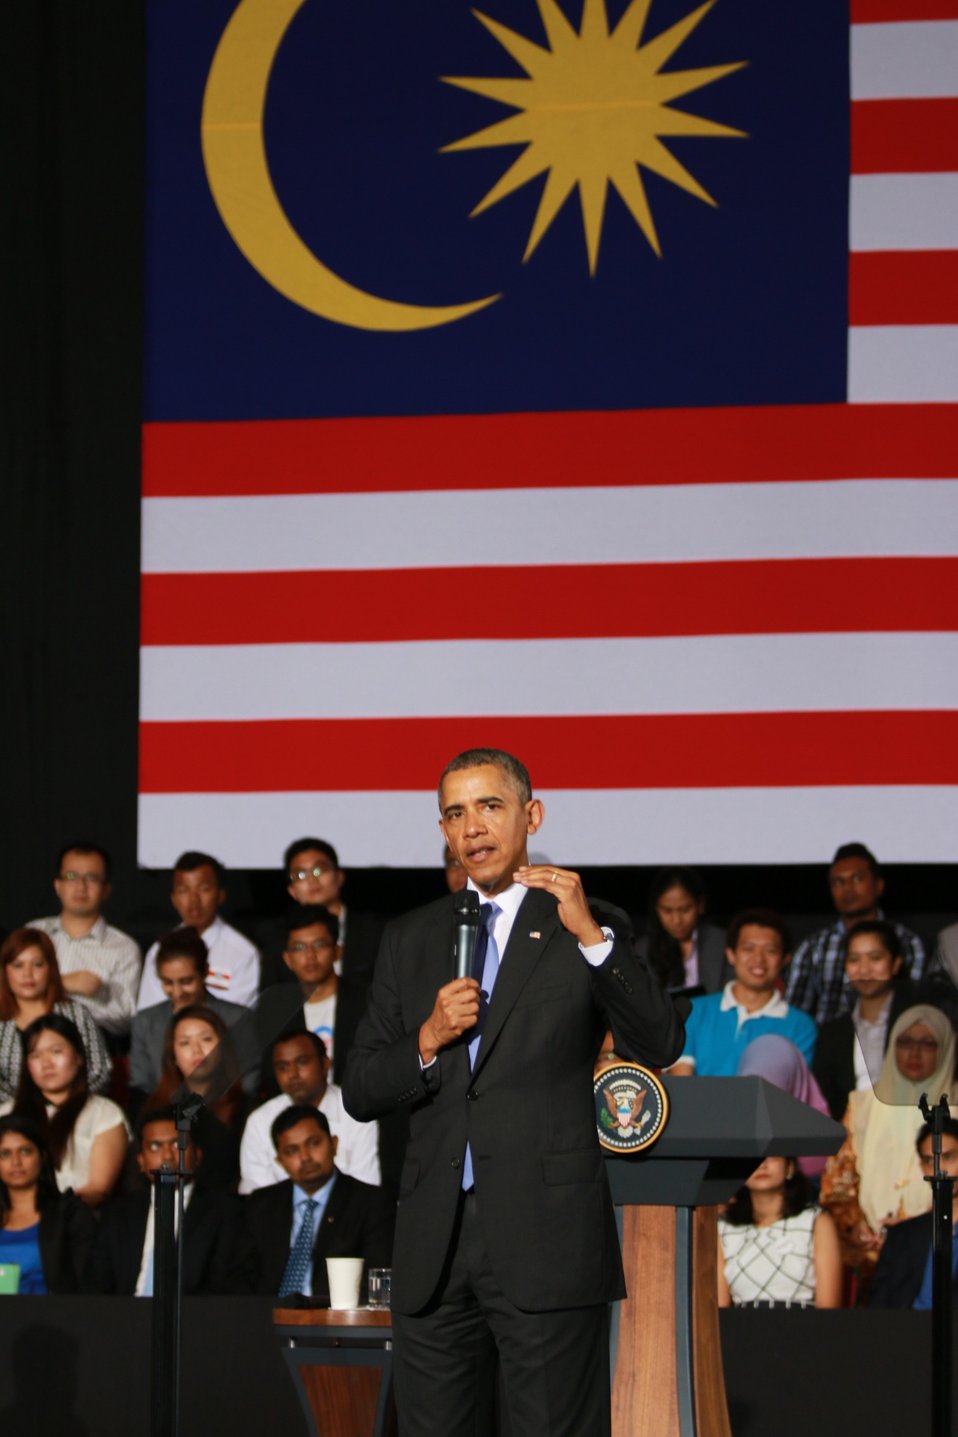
President Obama Delivers Remarks at a Young Southeast Asian Leaders Initiative Town Hall

President Barack Obama delivers remarks at a Young Southeast Asian Leaders Initiative Town Hall in Kuala Lumpur, Malaysia on April 27, 2014.